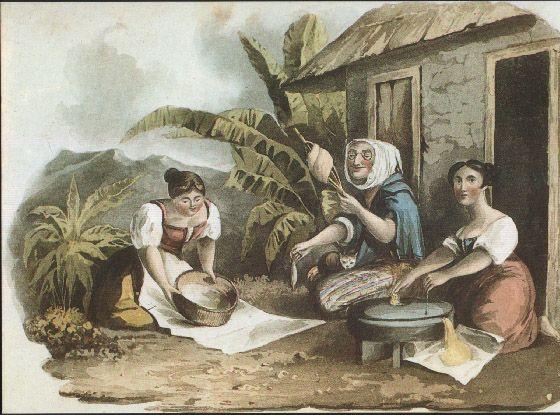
Português: Rural Occupations. Litografia, 22,5 x 11,6 cm. Pub. in A History of Madeira, At Rudolph Ackermann’s, Londres, 1821. Arquivo Histórico da Madeira Bilhete postal editado in Cousas & Lousas das Cozinhas Madeirenses, catálogo de exposição comissariada por José Manuel de Sainz-Trueva, Teatro Municipal do Funchal, DRAC, Funchal, Dez. 1987 a Jan. 1988.